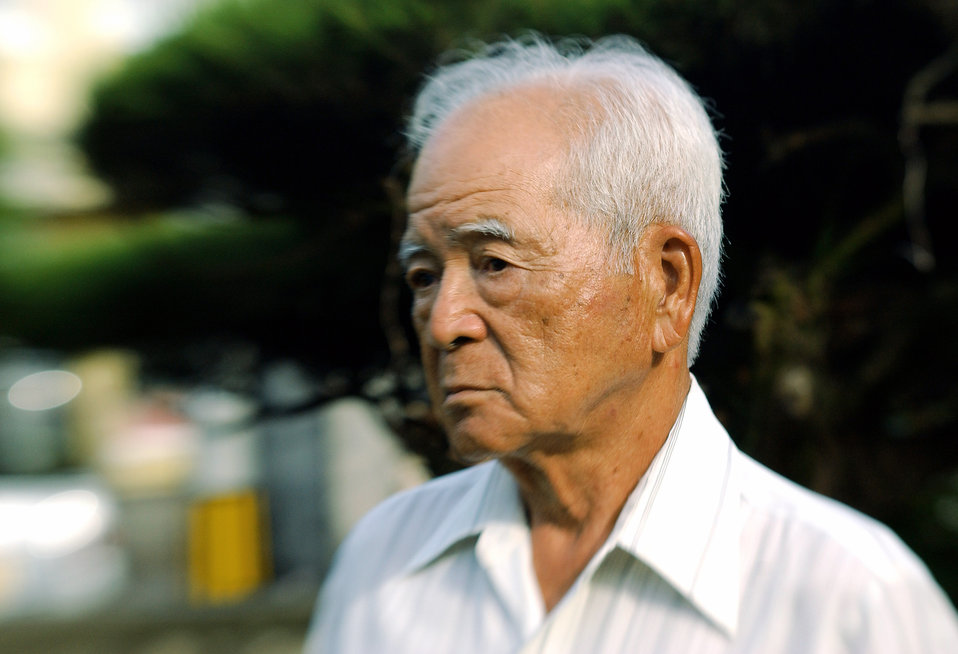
Post-war Reflections; Long-time employee recalls U.S. support for Okinawan recovery

Eiichiro Shimabukuro, 77 years old, recalls the aftermath of World War II when the U.S. military worked with Okinawans to rebuild the island's devastated infrastructure and return life to normalcy, during an interview Aug. 12. Mr. Shimabukuro has worked and volunteered at the Kadena Air Base, Japan, clinic since 1950 and was the first Okinawan hired to work there.